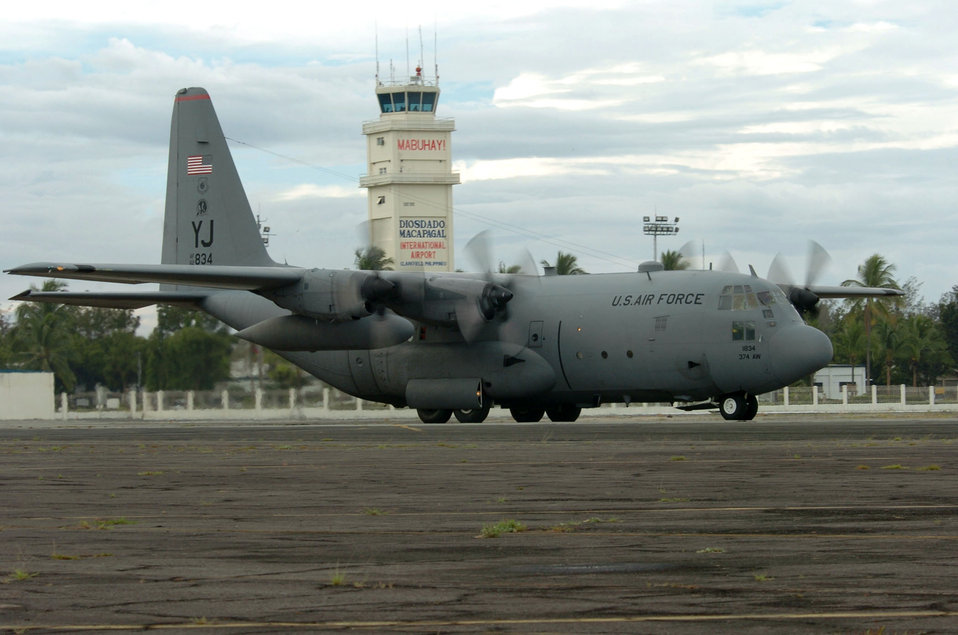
Airmen arrive for Balikatan 2004

CLARK AIRFIELD, Philippines -- A C-130 Hercules aircraft from the 36th Airlift Squadron at Yokota Air Base, Japan, arrives here to participate in exercise Balikatan 2004. More than 100 airmen and four C-130 Hercules aircraft from Yokota are participating in joint training with Philippine military forces. Exercise Balikatan helps improve combined planning, combat readiness and interoperability between U.S. and Philippine armed forces. About 2,500 U.S. troops and 2,300 Philippine forces will take part in the exercise.